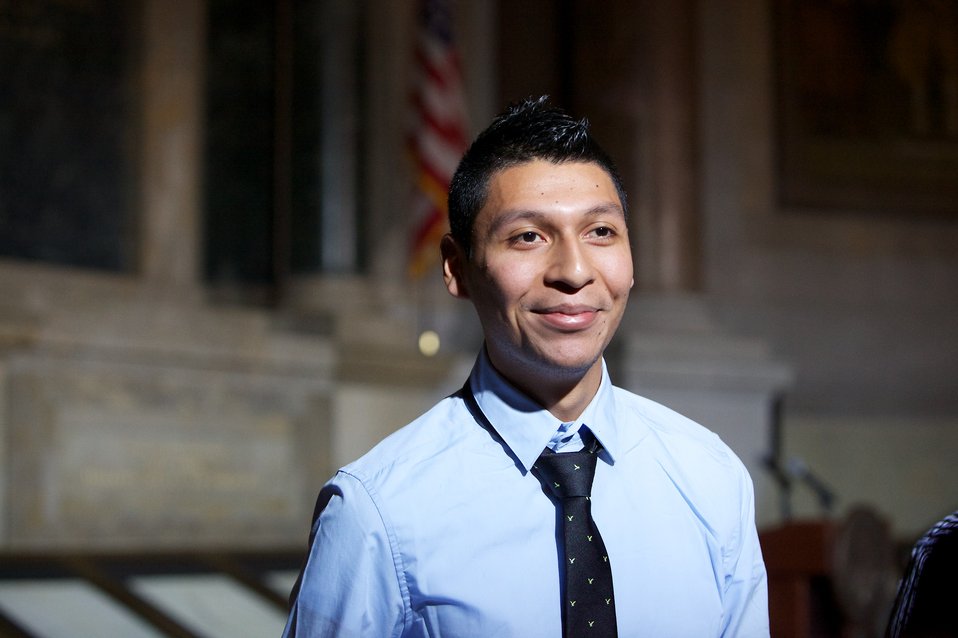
Naturalization Ceremony with Michelle Obama